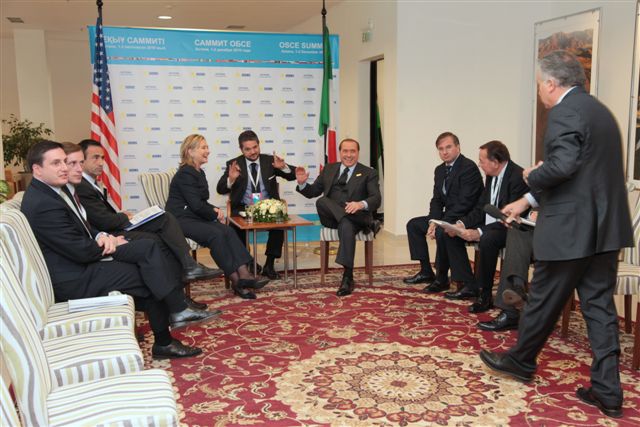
Secretary Clinton Holds a Bilateral Meeting With Italian Prime Minister Berlusconi

U.S. Secretary of State Hillary Rodham Clinton holds a bilateral meeting with Italian Prime Minister Silvio Berlusconi after their bilateral meeting at the OSCE Summit in Astana, Kazakhstan, on December 1, 2010.